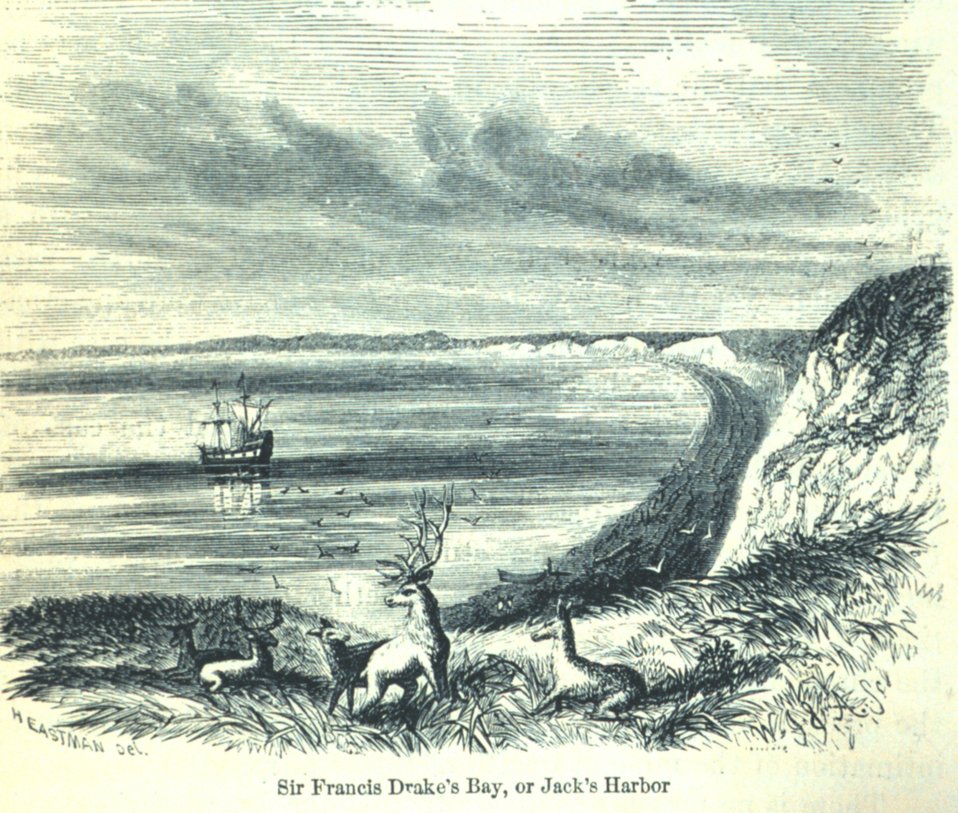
Fanciful view of Drake's Bay with the Drake's vessel, the GOLDEN HIND, at anchor Drake sailed on the California coast in 1577. In: 'The Annals of San Francisco'. Frank Soule, John Gihon, and James Nesbit. 1855. Frontispiece. D. Appleton & Company, New York. F869.S3.S7 1855.